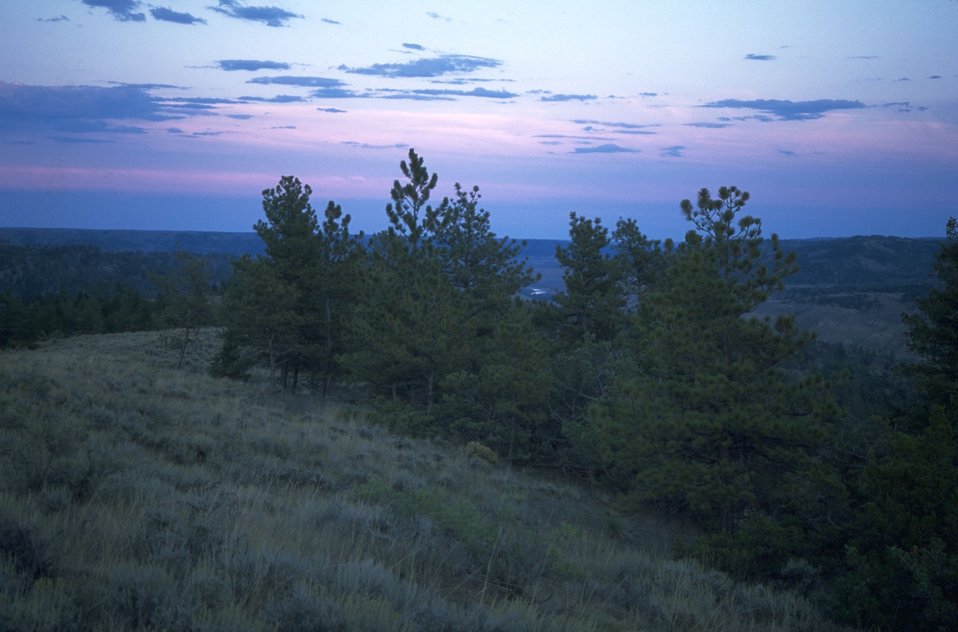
Clouds, sky over the Missouri Breaks